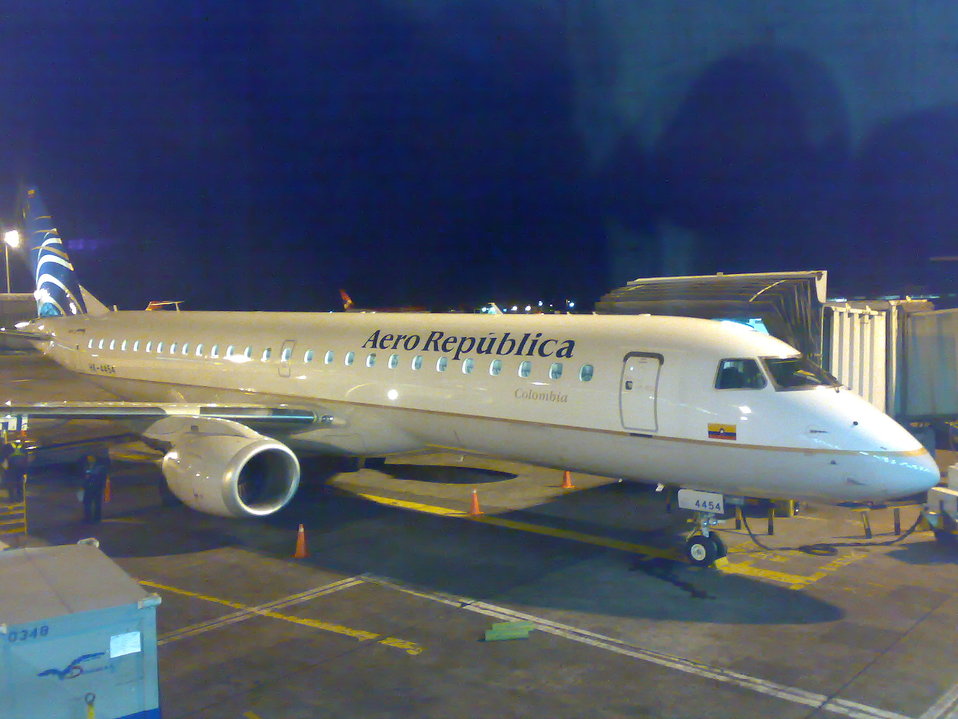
An Embraer 190 jet by the Colombian airline AeroRepública at El Dorado International Airport, Bogotá, Colombia.